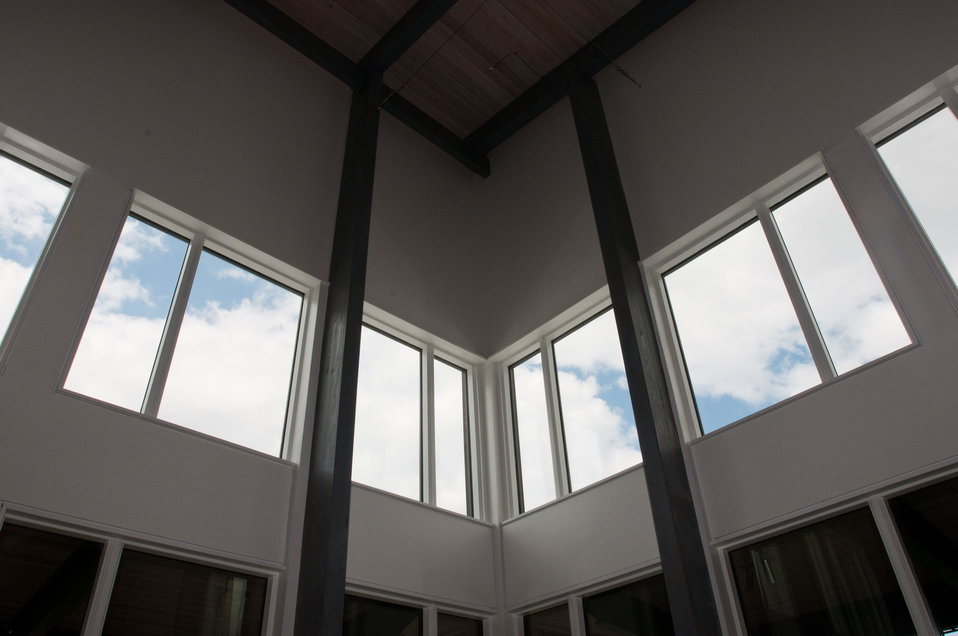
Cooper Vineyards in Louisa, VA, is the first winery on the East Coast and the second in the country to be awarded the fourth and highest, Platinum certification by Leadership in Energy and Environmental Design (LEED).
From a Virginia Wine Board Marketing Office press release, “The process of building a LEED platinum certified building was initially more expensive and arduous than co-owners, Jacque Hogge, MD and Geoffrey Cooper, MD expected, but they were able to get financial assistance from the United States Department of Agriculture. “Know that there are grants available to help with the costs of sustainable building projects,” Hogge advises to other potential green wineries. Cooper Vineyards received 2 of the 3 USDA (U.S. Department of Agriculture Rural Development (RD) Rural Energy Financing program) grants awarded in Virginia in 2010 to help with the expenses of their construction.”
Rural Energy Financing program focuses on loan guarantees, loans and grants to agricultural producers, businesses, cooperatives and rural residents for renewable energy systems and to make energy efficiency improvements.
The tasting room and building collects rainwater from the roof; uses low flow water fixtures to reduce usage by 40%; utilizes structurally insulated panels for the roof and walls; heats and cools the entire building using a geothermal system that includes pipes that are embedded in the parking lot; low-voltage LED lighting with daylight and occupancy sensors provide ample light when it is needed; a solar panel array provides more than 15% of the energy needs for the building, and much of the construction materials are from local and recycled material sources. For more information about USDA please go to www.usda.gov, Rural Development and Rural Energy Financing. LEED was developed by the U.S. Green Building Council (USGBC) is a 501 c3 non-profit organization committed to a prosperous and sustainable future for our nation through cost-efficient and energy-saving green buildings.